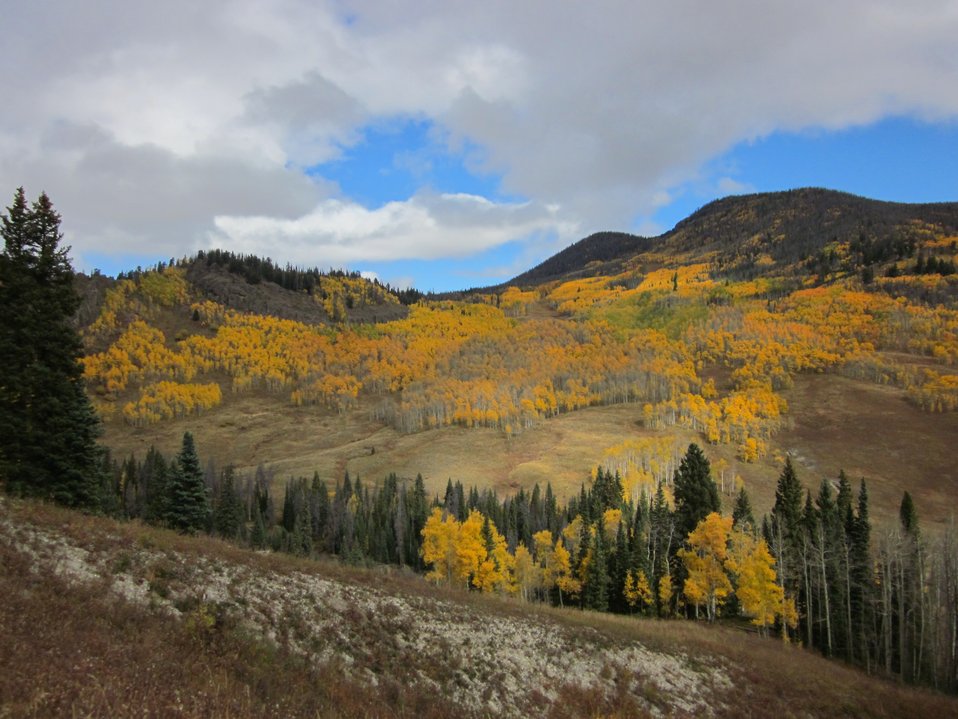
Yellow and orange aspens color the hillside near Crooked Creek Road on the Sulphur Ranger District, Arapaho National Forest. The Sulphur Ranger District is more than 442,000 acres in Grand County, CO. Being surrounded by mountain peaks, meadows and lakes, you are in for a truly majestic experience in this forest..